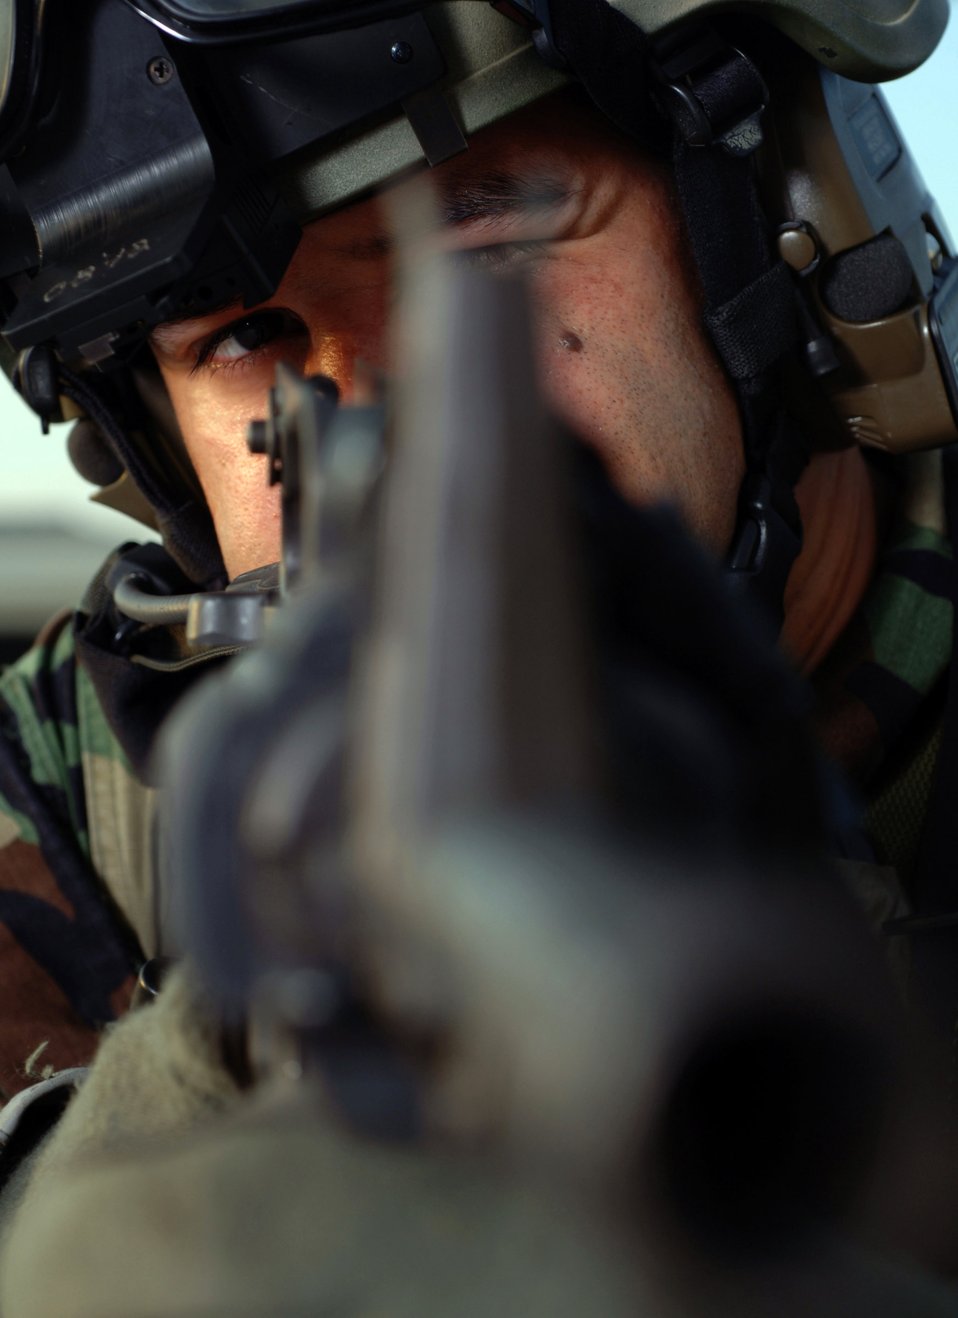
Train now, save later

KADENA AIR BASE, Japan -- Staff Sgt. J. Pierre Griffin adjusts the sights of his weapon during training here. The 31st Rescue Squadron trains, equips and employs combat-ready pararescuemen worldwide. They also use any means available to provide combat and humanitarian search and rescue and medical assistance in all environments. Sergeant Griffin is a pararescueman from the 31st RQS here.